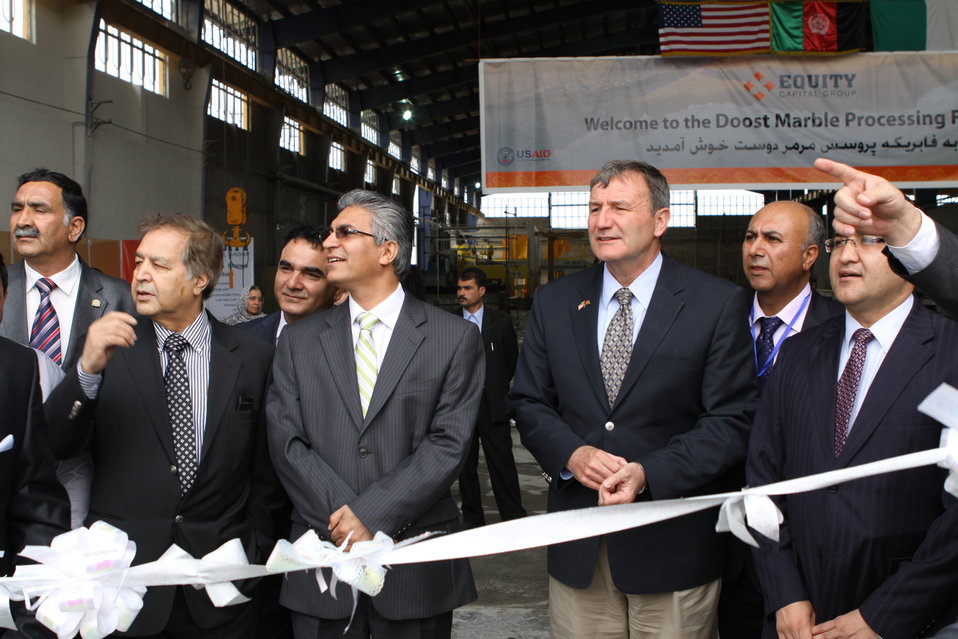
100525 Hirat Marble Conference 060